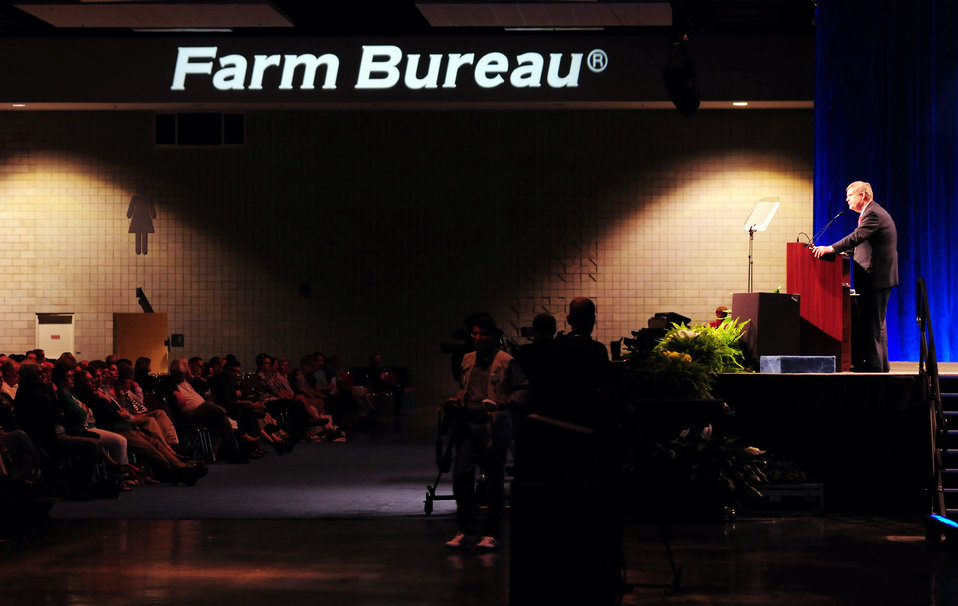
Agriculture Secretary Tom Vilsack speaks at the American Farm Bureau Annual Meeting Closing Ceremony at the Convention Center in Waikiki, Hawaii, on Sunday, January 9, 2012.